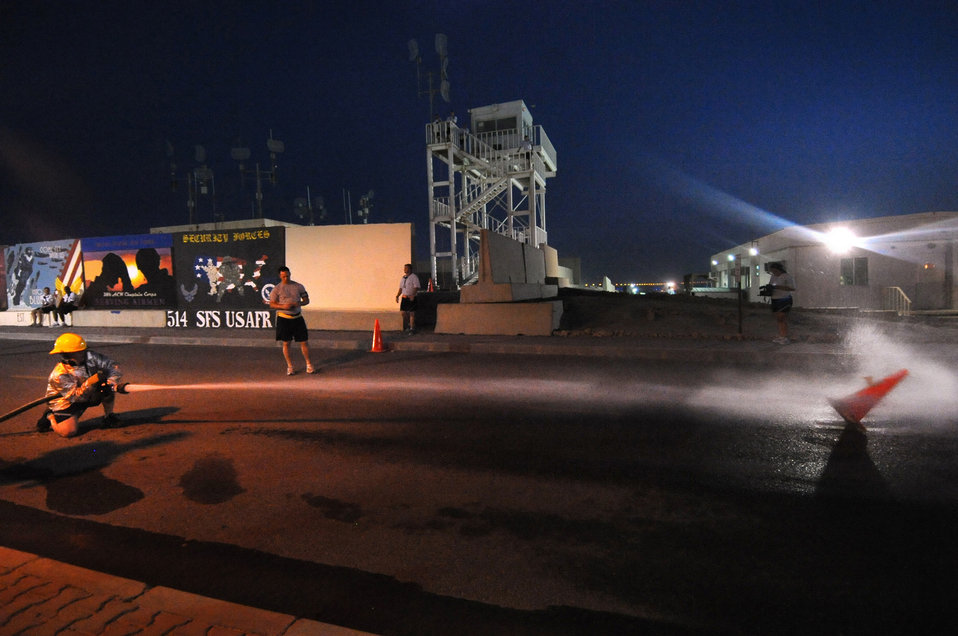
Firefighter challenge

An Air Force firefighter sprays water at a cone May 28, 2011, during a firefighter challenge in Southwest Asia. The challenge featured multiple events, including tool carry, equipment hoist, dummy carry, hose advance, tire strike and hose pack carry.